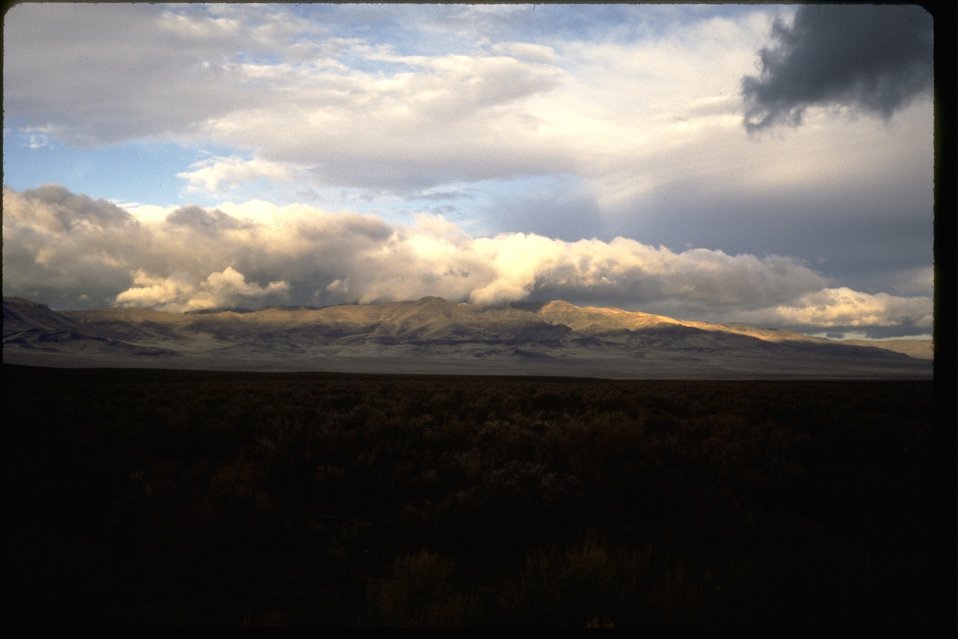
Looking west from highway 95 to the clouds over the prairie hills in the Oregon Canyon Wilderness Study Area. OR 3-157